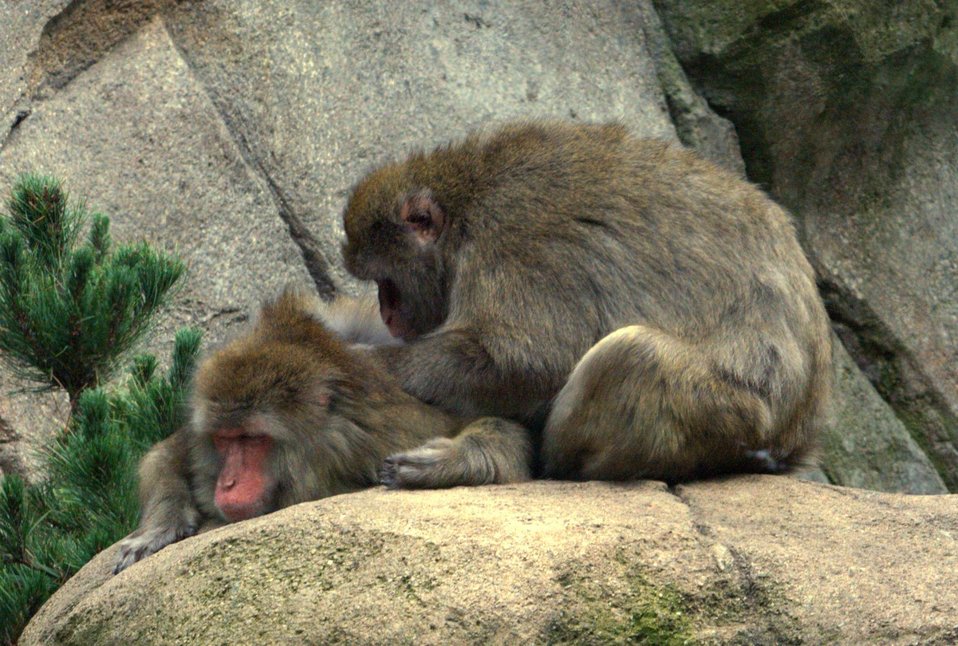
Two Japanese Macaques, at the Buffalo Zoo, engaged in social groooming.